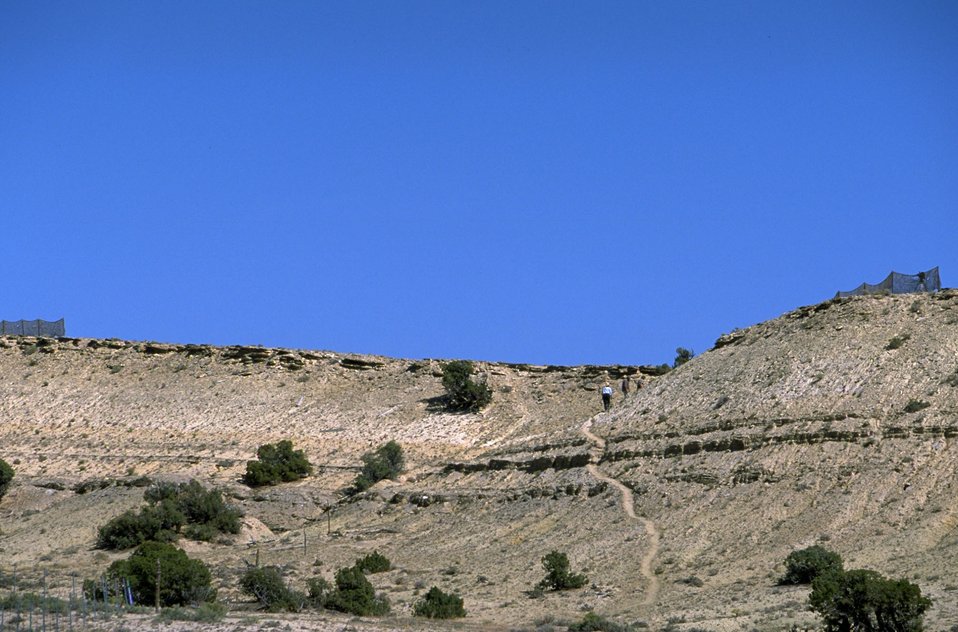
Sandy bluffs and trail in the Pryor Mountain National Wild Horse Range